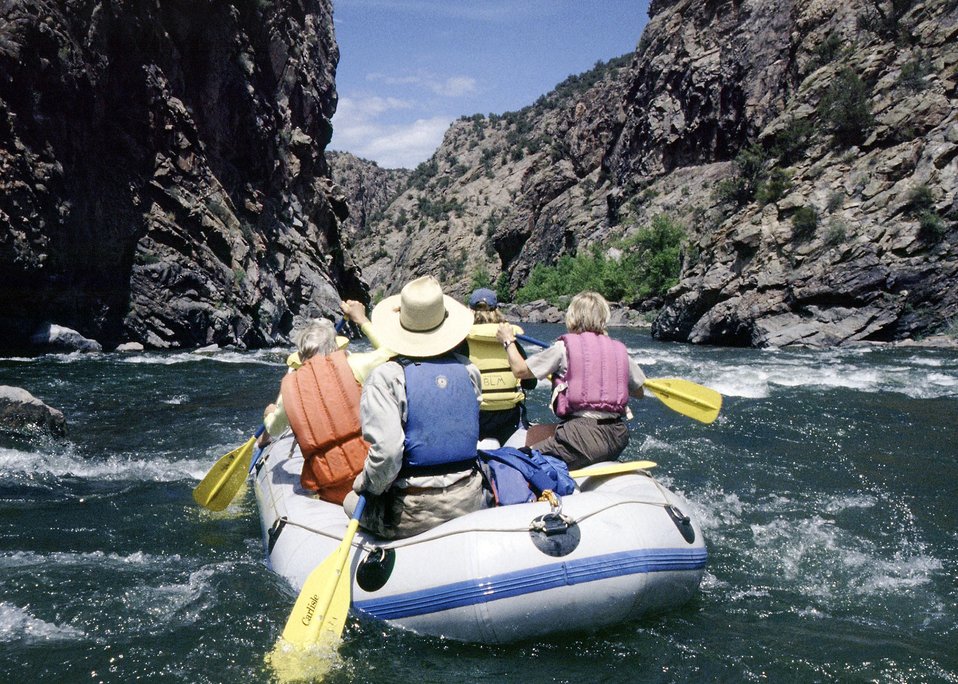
Rafting